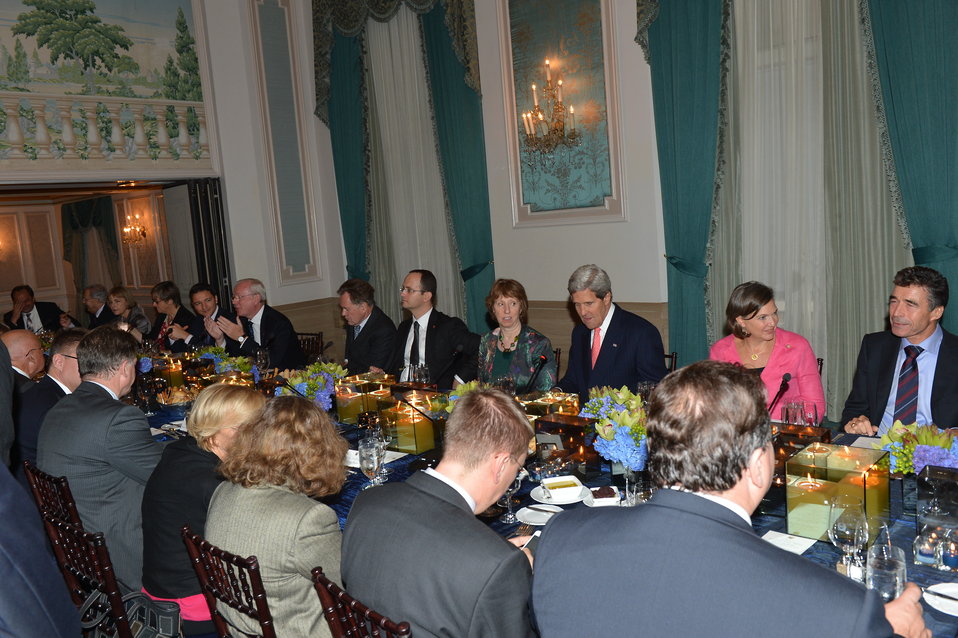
Secretary Kerry Attends the Transatlantic Dinner

U.S. Secretary of State John Kerry attends the Transatlantic Dinner in New York City on September 26, 2013.